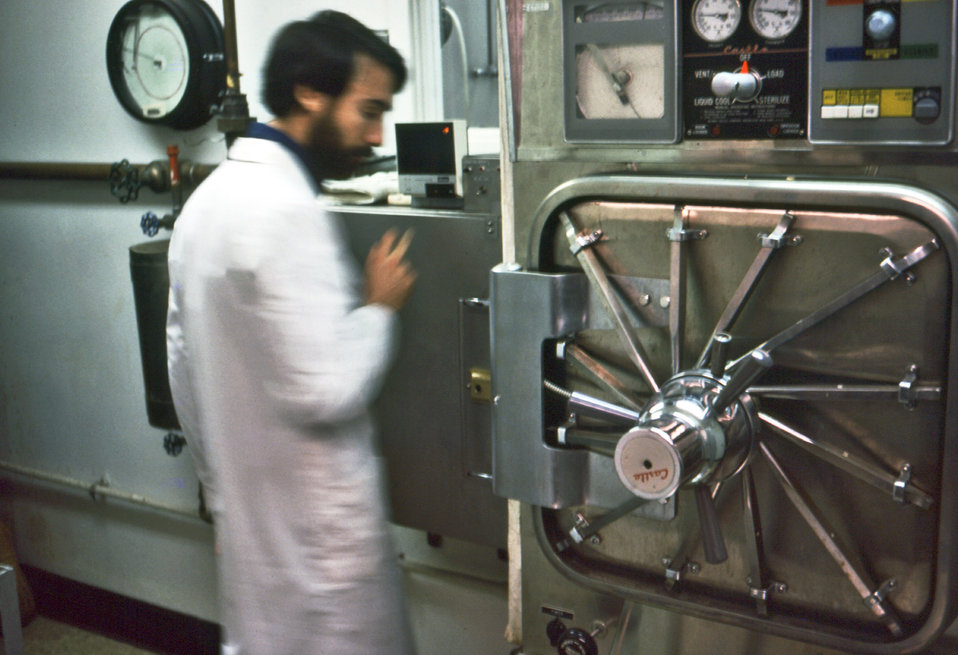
During his work on the Marburg outbreak of 1975, CDC laboratorian Jim Lang was shown here in the CDC's first maximum containment laboratory.